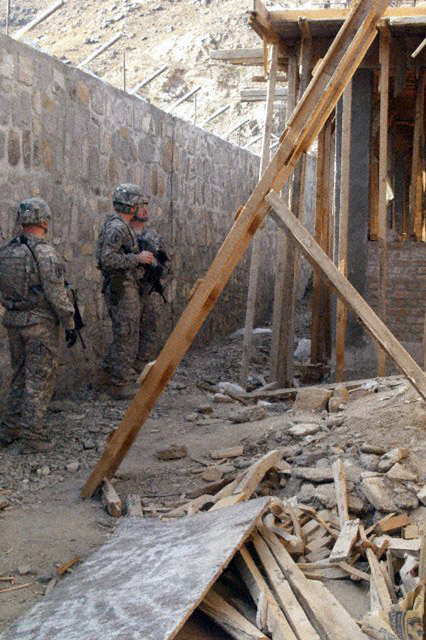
Engineers inspect construction on the Kunar Prison

Kunar Provincial Reconstruction Team leaders and engineers inspect construction on the Kunar Prison Oct. 29, 2009, in the Kunar Province, Afghanistan. Correctional experts and PRT leaders and engineers visited the prison construction site to conduct a quality assurance check and address potential security concerns.